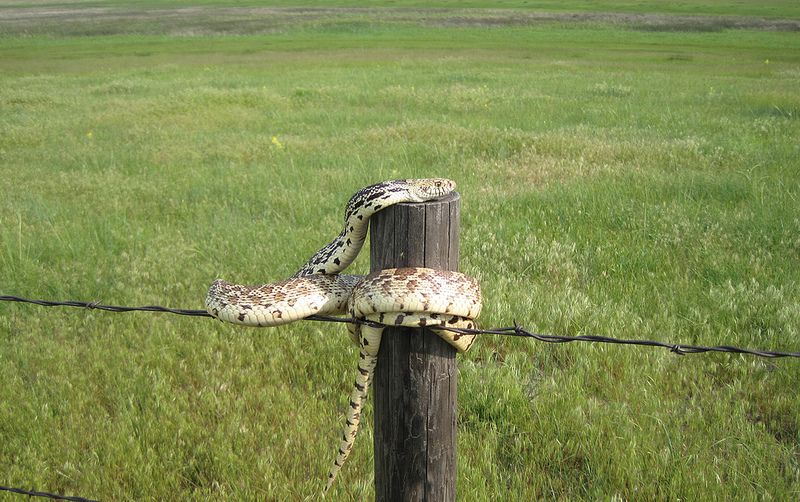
Sunbathing Bull Snake

This picture of a bull snake was taken on June 6, 2011 while sampling for the American burying beetle.

Location: A large ranch near Merriman, Nebraska

Credit: Lindsay Vivian / USFWS

Photo Contest Entry #39